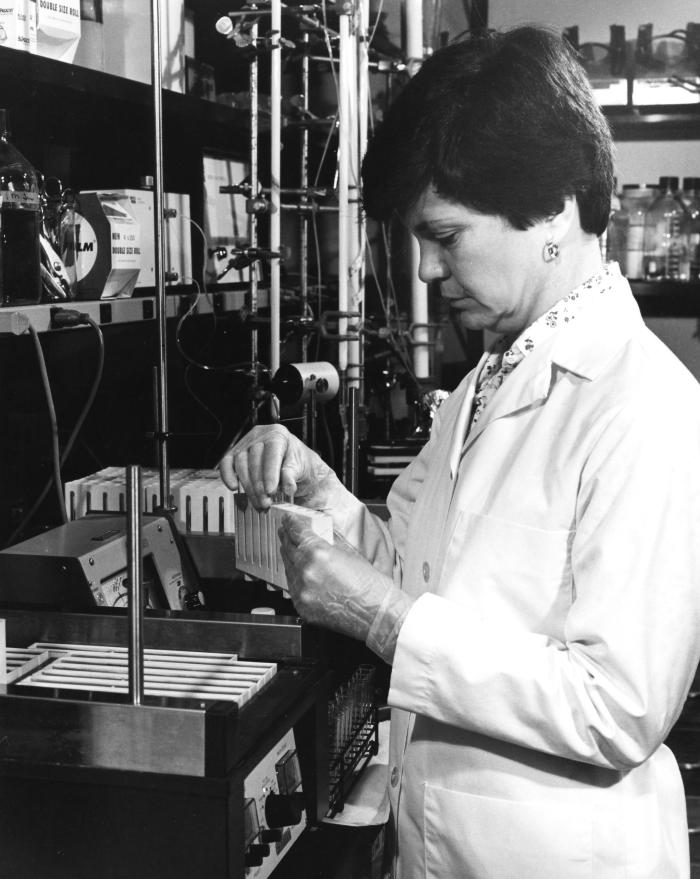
In this 1983 photograph, Rosemary Ramsey, a Centers for Disease Control research chemist, was shown here conducting chromatography tests on biological fluids from AIDS patients.